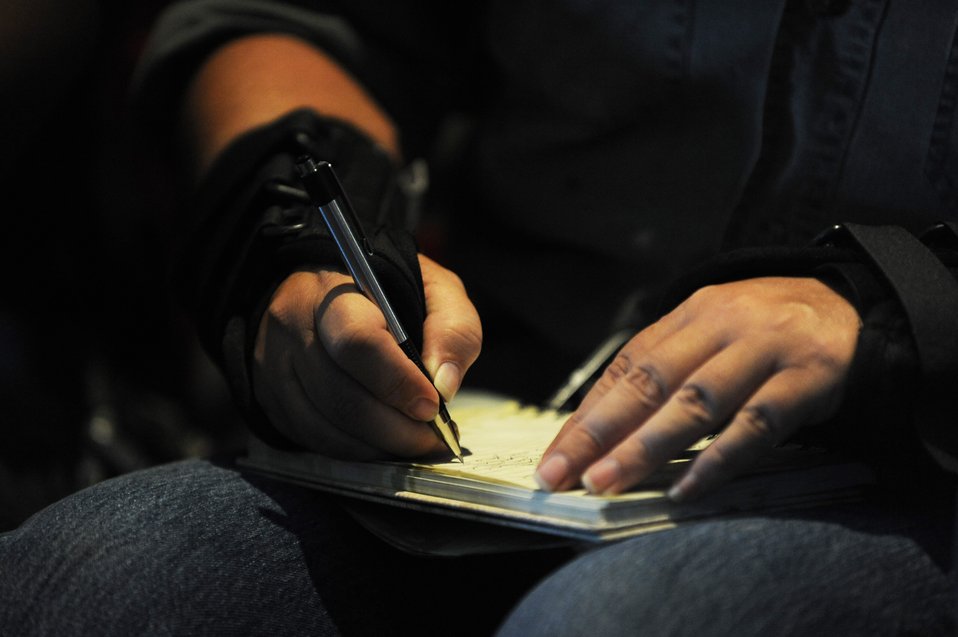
Bloggers Flight with the Hurricane Hunters

Cindy Morgan takes notes for her personal blog onboard a WC-130J